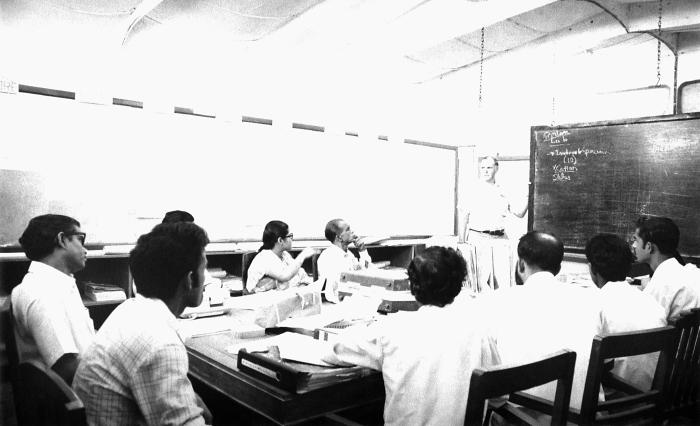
During the Bangladesh smallpox eradication campaign, in order to keep abreast of new findings, changes in plans, and to create the appropriate strategies that would help to rid the country of this dreaded viral disease, program leadership would meet on a regular basis. This meeting was being held at 'Smallpox Zero' headquarters, and standing at the drawing board was former E.I.S. officer, Stanley O. Foster, M.D., M.P.H. The woman seated to his right, wearing glasses, was Dr. Farida Hug, who was at the time, the Chief of the Smallpox Laboratory.